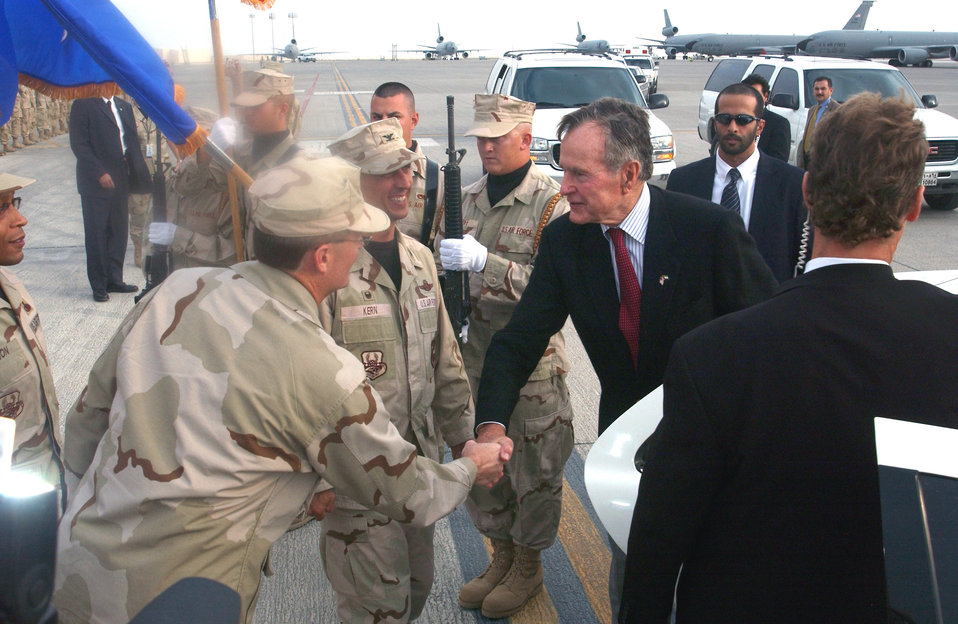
Former president visits Airmen

Col. Doug Fehrmann shakes hands with former President of the United States George H.W. Bush Nov. 20 on the flightline of this Southwest Asia base. Colonel Fehrmann is the 380th Air Expeditionary Wing vice commander. President Bush stopped by the wing to listen to a mission briefing and meet the Airmen assigned here.